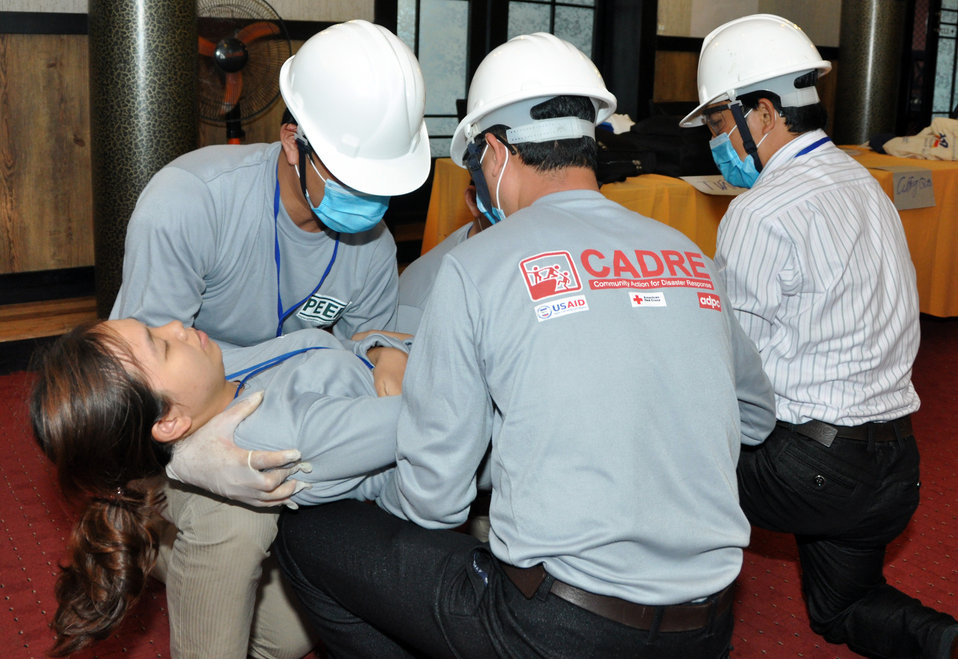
Disaster and Emergency Training Funded by USAID in Hue, Vietnam